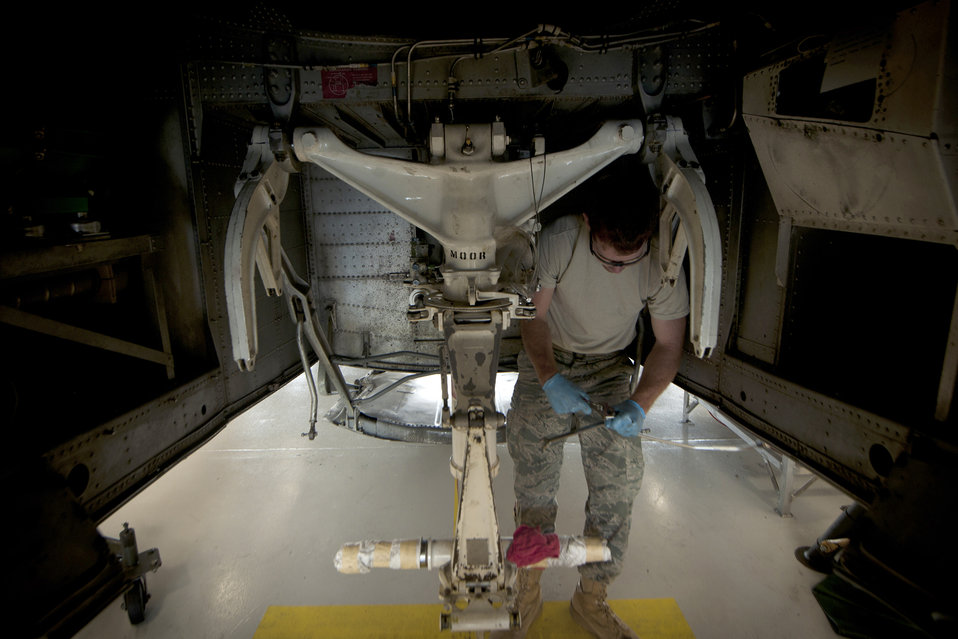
Inspection at Moody

Airman David Johnson prepares to replace hydraulic filters June 20, 2011, during an HC-130P Combat King inspection at Moody Air Force Base, Ga. Airman Johnson is a hydraulics inspection specialist assigned to the 23rd Component Maintenance Squadron.